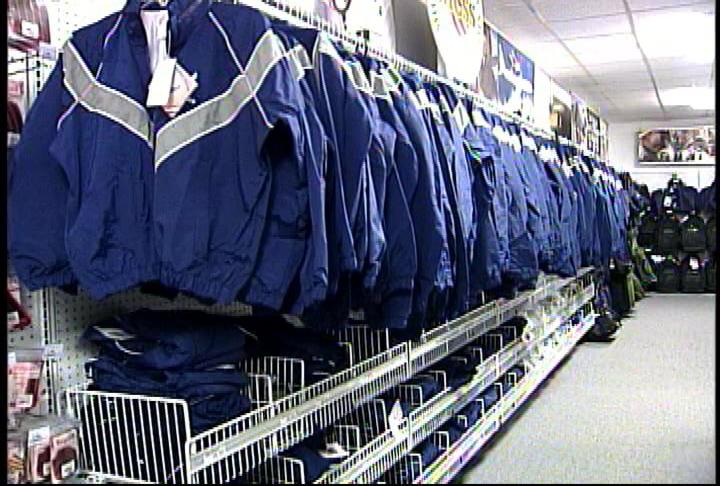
Oct. 1 effective date for Air Force uniform changes

The Air Force will effect some uniform changes Oct. 1, and all Airmen must have their physical training uniforms -- like these on the rack at a military clothing sales store -- available that day.